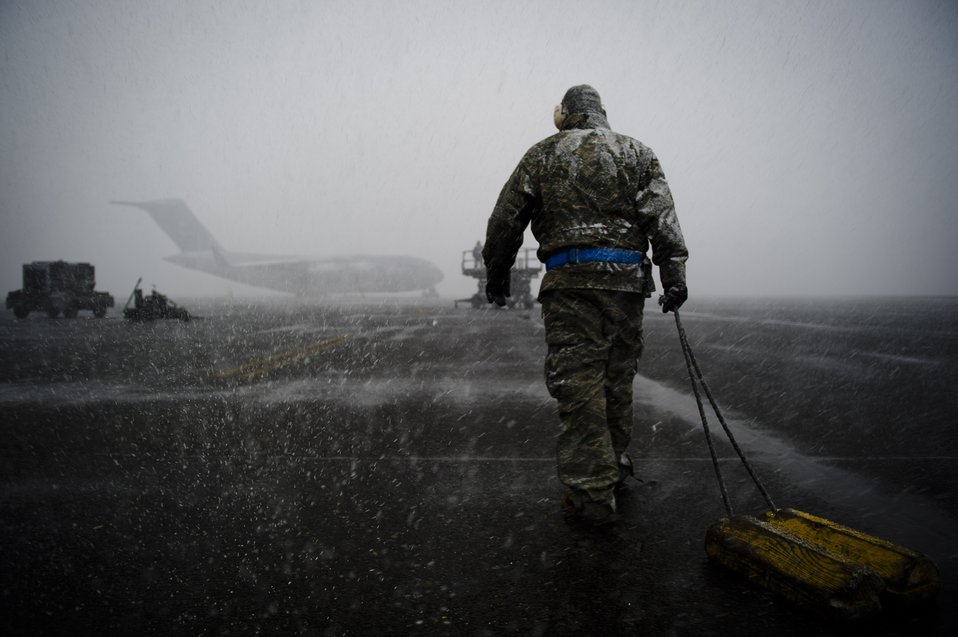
Going to work

An Airman assigned the 62nd Aircraft Maintenance Squadron pulls a set of wheel chocks toward a C-17 Globemaster III Feb. 23, 2011, at McChord Air Force Base, Wash.